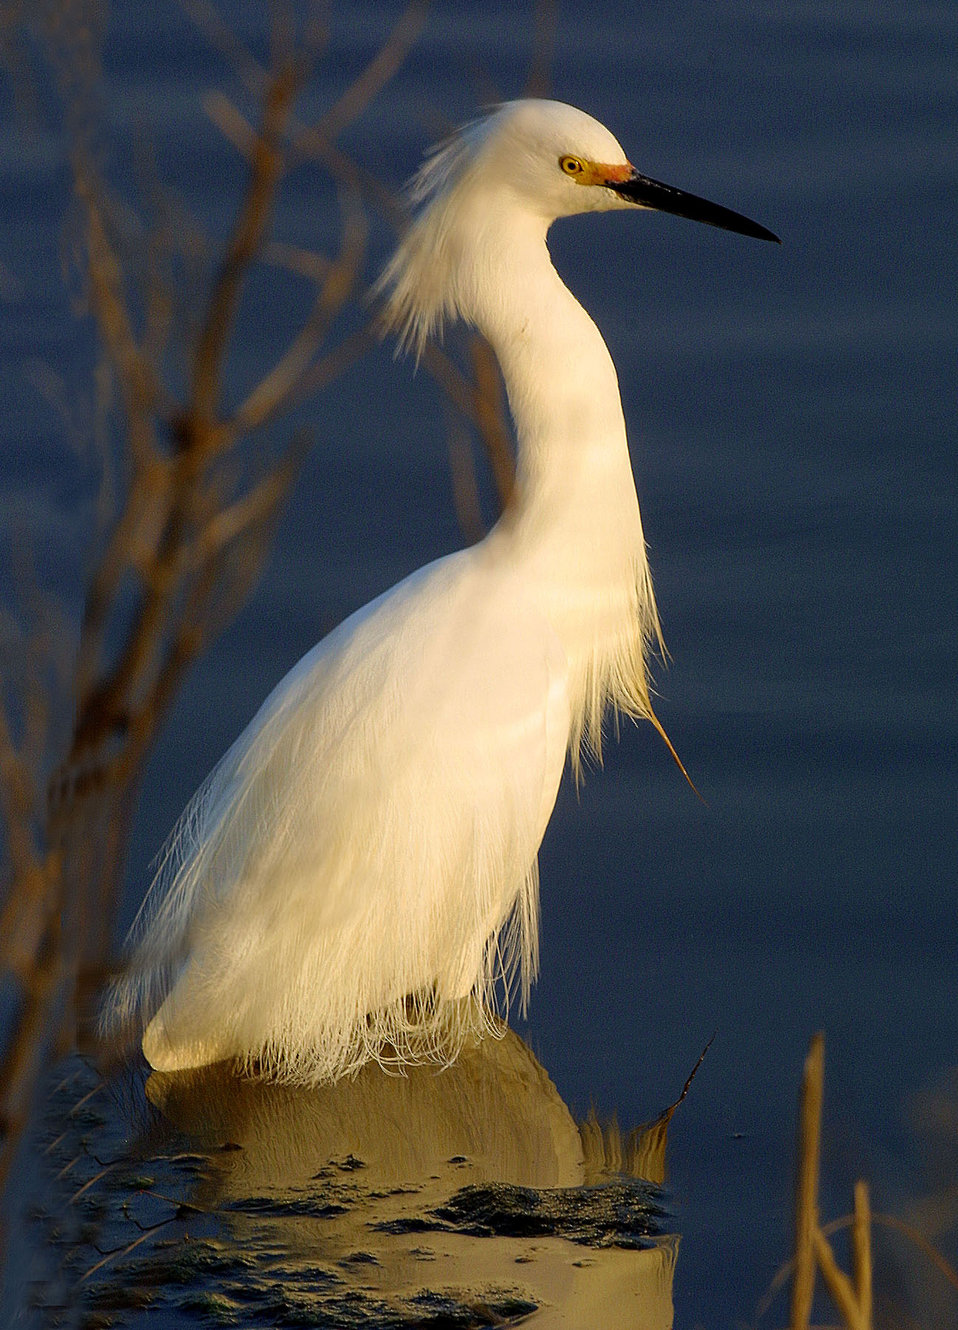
Snowy egret at John Heinz National Wildlife Refuge in Philadelphia, Pennsylvania.